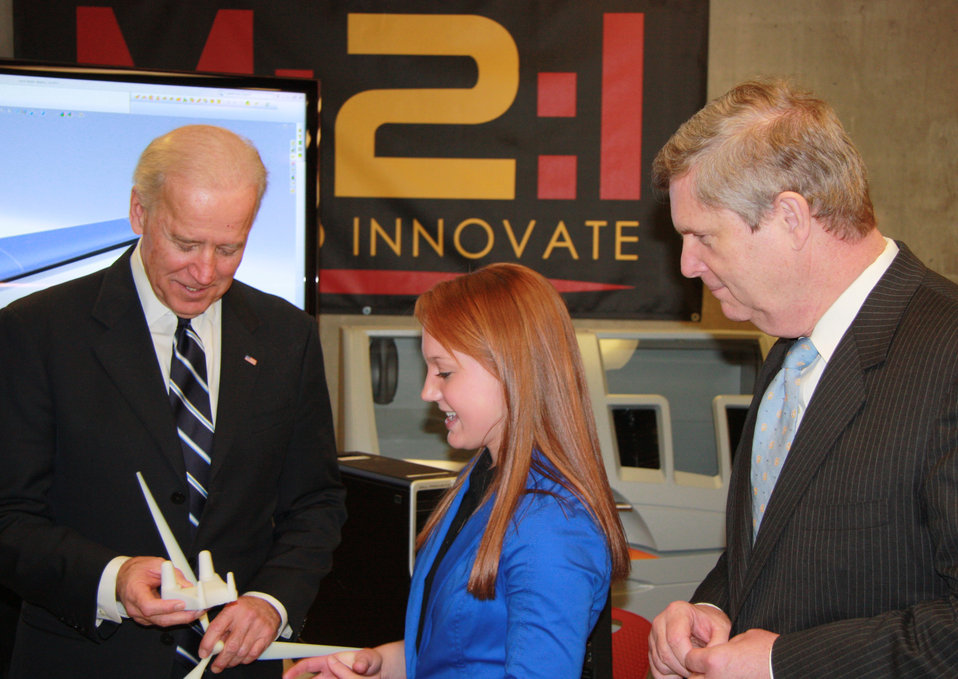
Agriculture Secretary Tom Vilsack and Vice President Joe Biden tour the Make2Innovate Lab in Howe Hall at the College of Engineering, Iowa State University in Ames, IA, on Thursday, March 1, 2012.